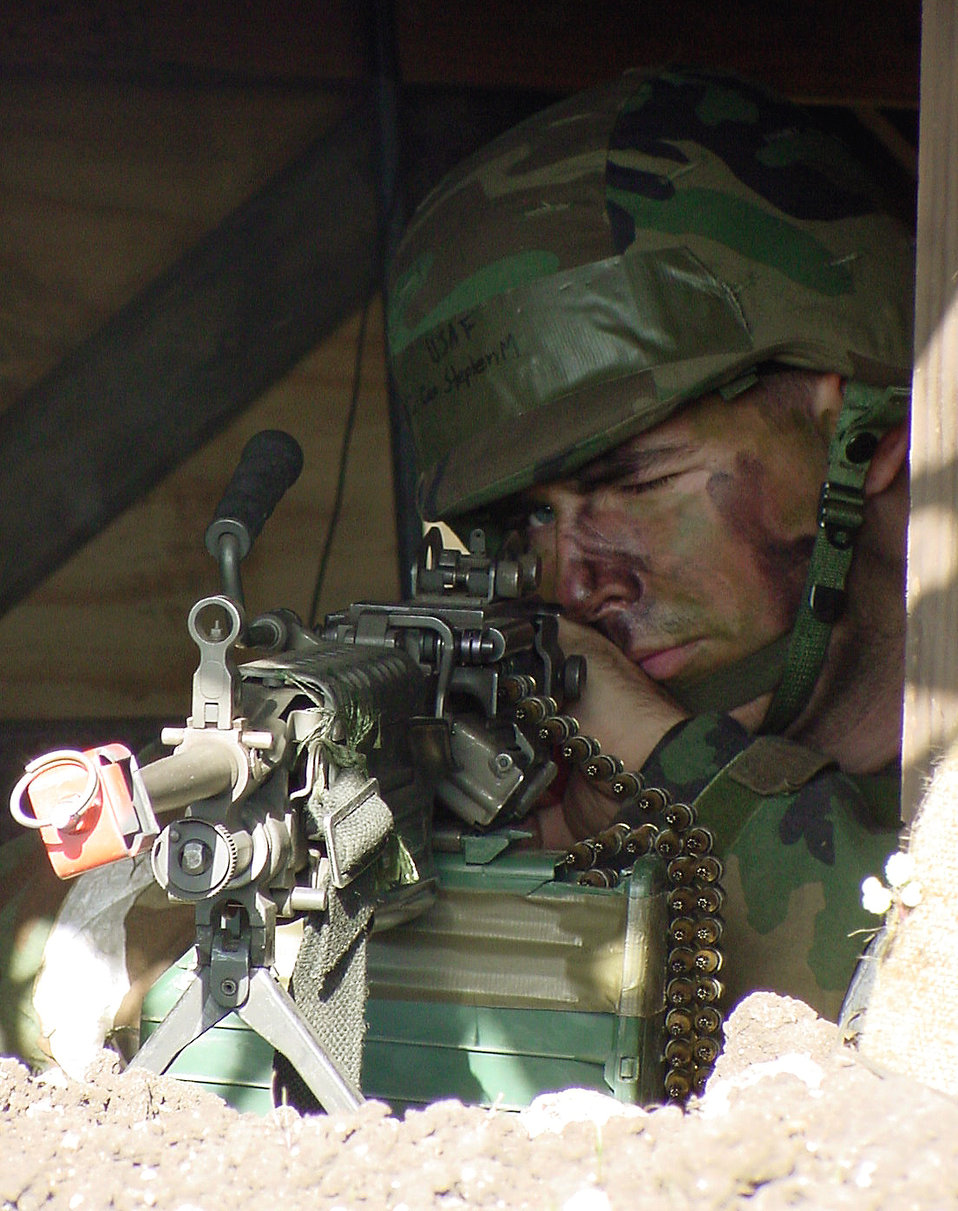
Watching the line

MISAWA AIR BASE, Japan -- Airman 1st Class Stephen Ceo watches the front line from his bunker here during an exercise. He is assigned to the 35th Security Forces Squadron.